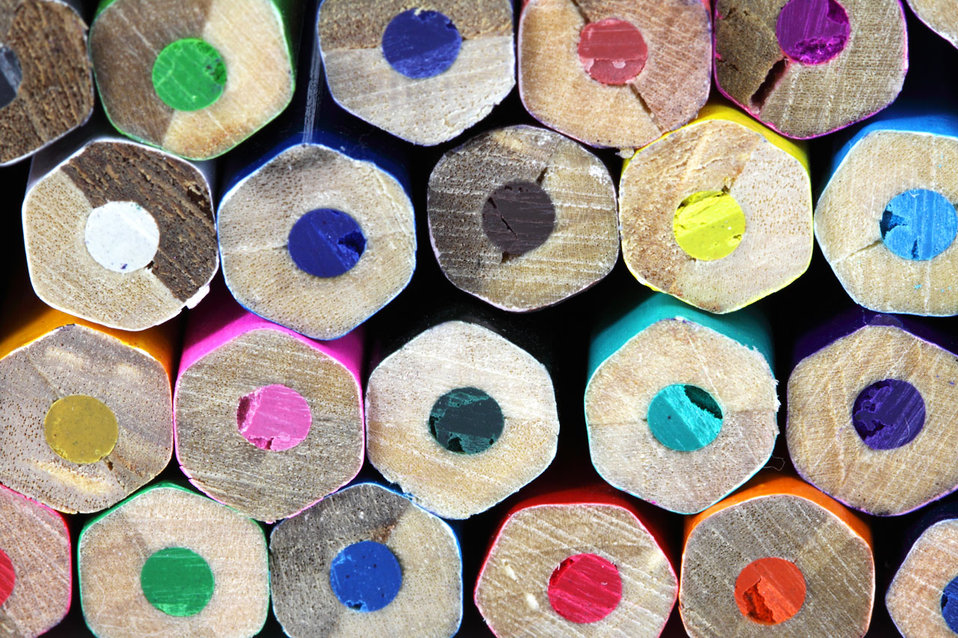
Pencil ends

Colored pencil ends.